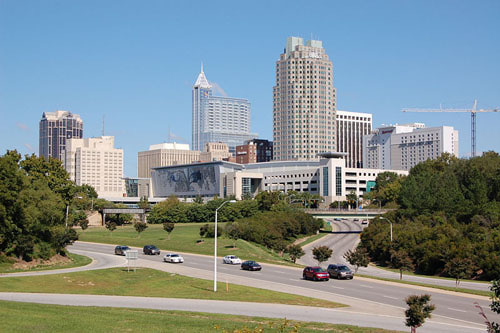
This is an image of the U.S. Department of Agriculture's (USDA) climate research facility on in Raleigh, NC.